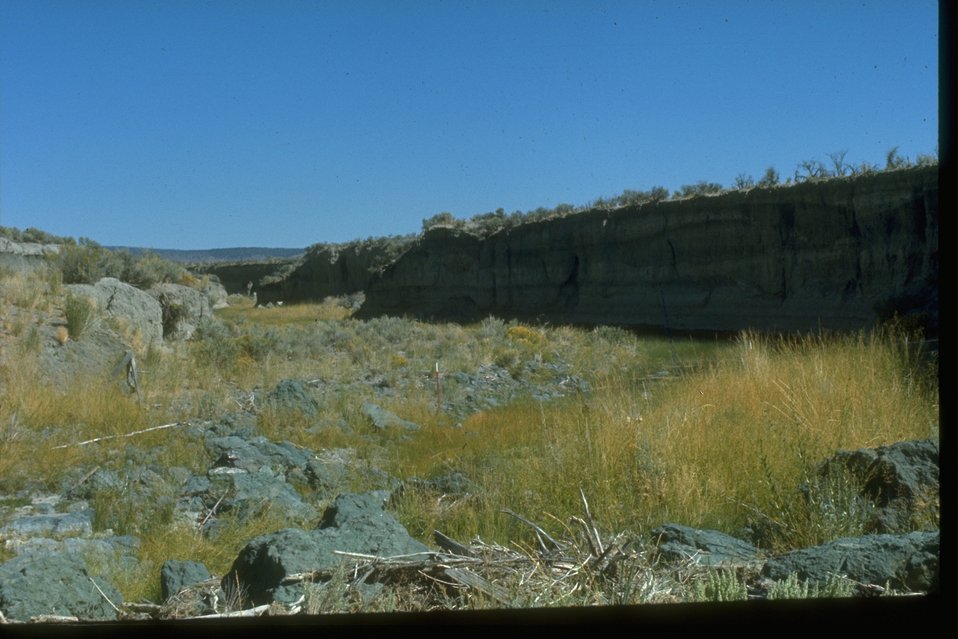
Recovering riparian area within an entrenched channel.